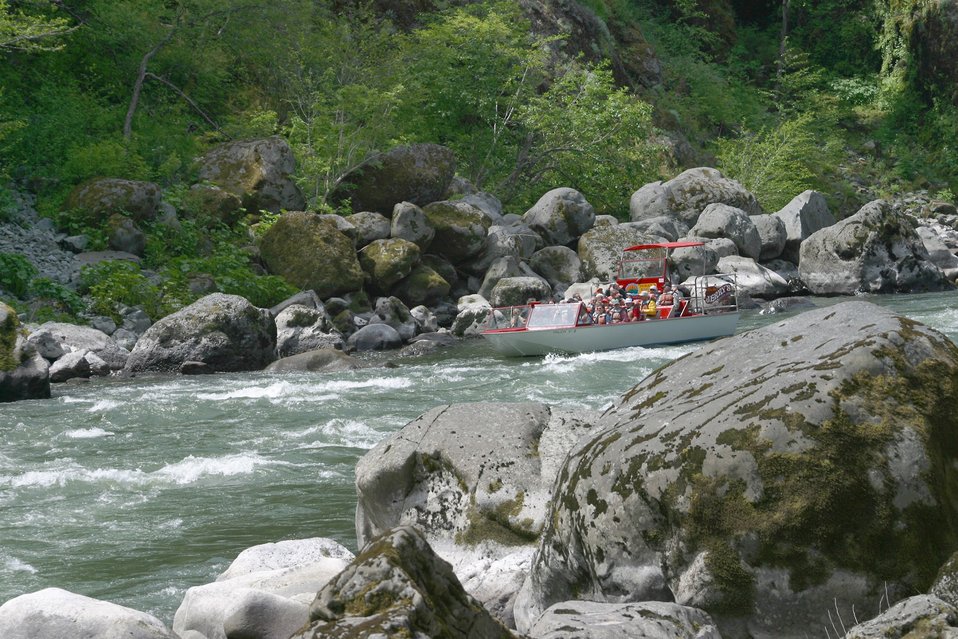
Wild section of the Rogue River from Grave Creek to Foster Bar May 19 to May 22.